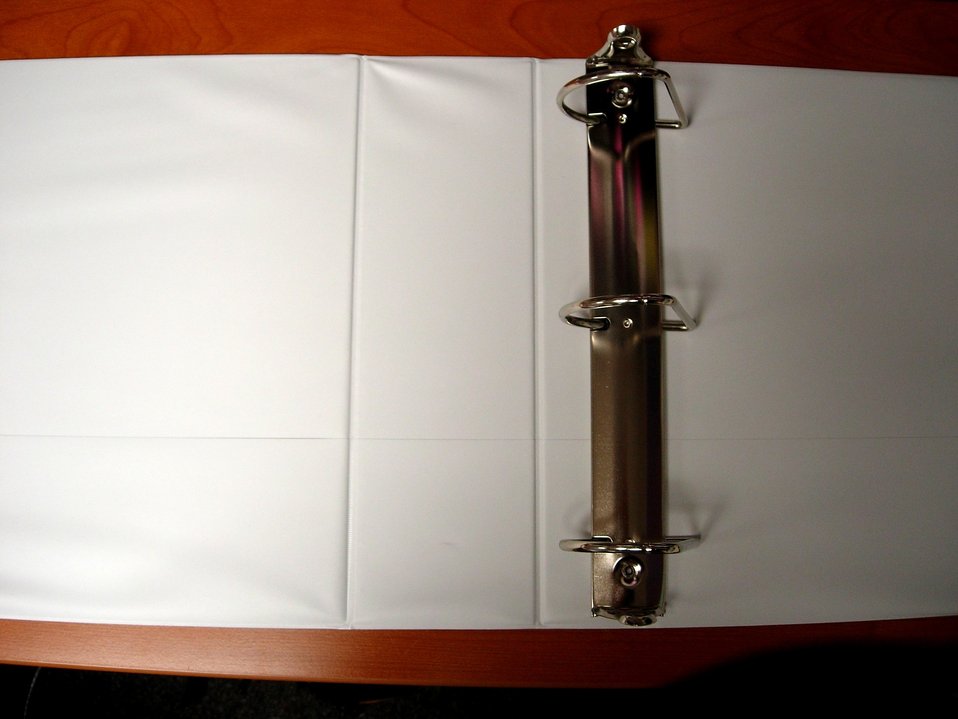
D-ring type 3 ring binder (opened)